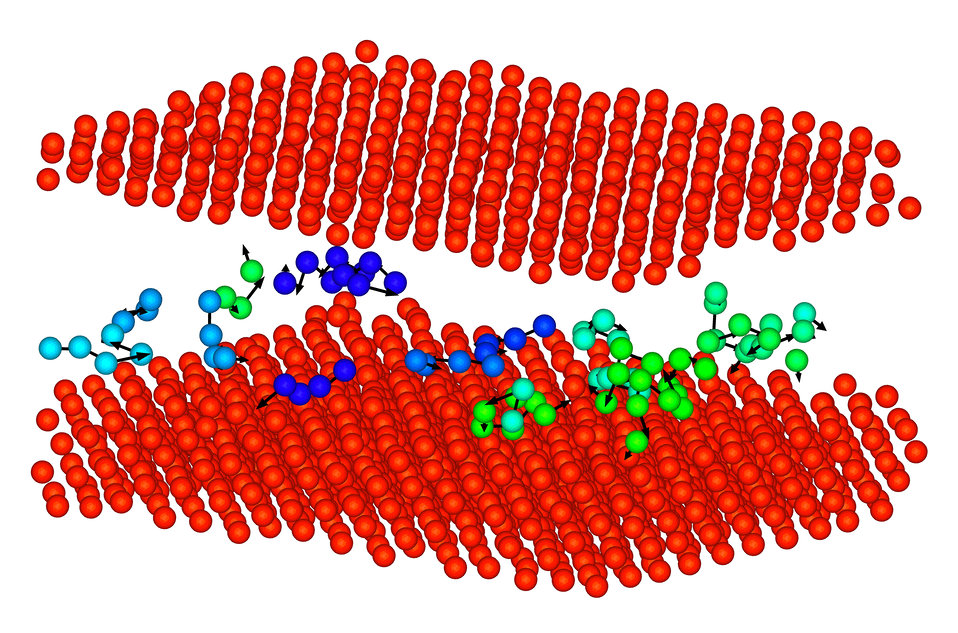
Polycrystalline materials

Between a polycrystalline material's grains (saffron layers) exist disorderly areas called grain boundaries, the behavior of which has been difficult to understand. The green and blue objects in the boundary are string-like collections of atoms that NIST scientists have recently shown behave like glass-forming liquids, a similarity that should help scientists analyze a wide range of materials.